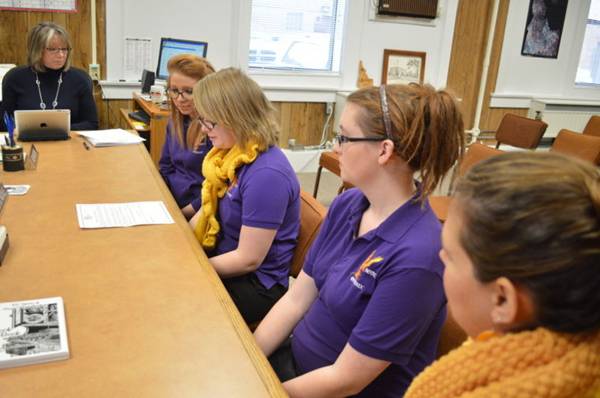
National Drug Fact Week

South Central Public Health District Health Education Specialist Adria Masoner and Mt. Harrison High School student body representatives Sadie Foote, Nicole Cook and Paige Jones met with the Minidoka County Commissioners on Monday. There the group asked Commission Chairman Bob Moore to proclaim it “National Drug Fact Week.”